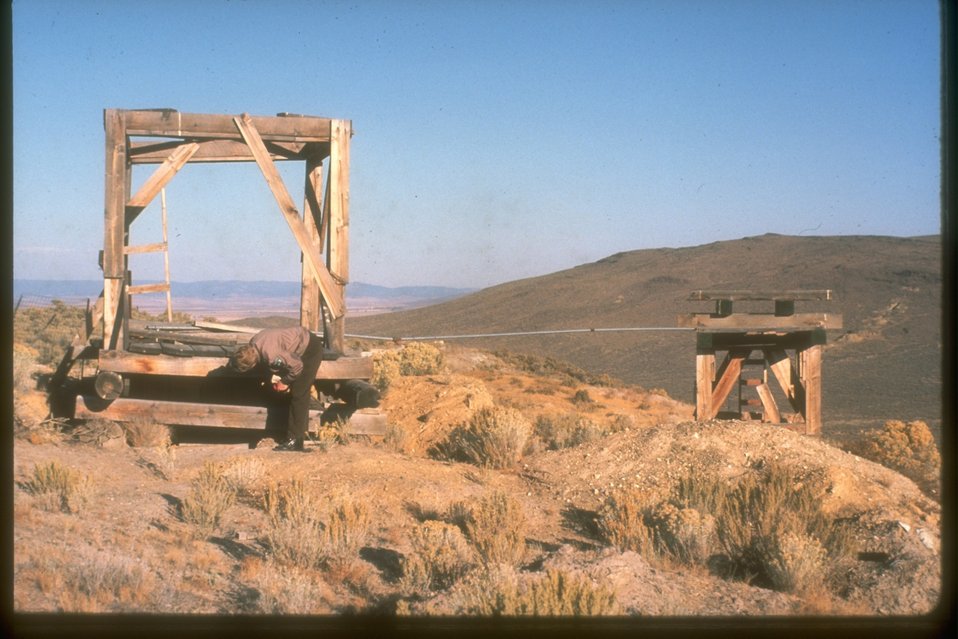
BLM employee looking into old mining shaft on canyon ridge.